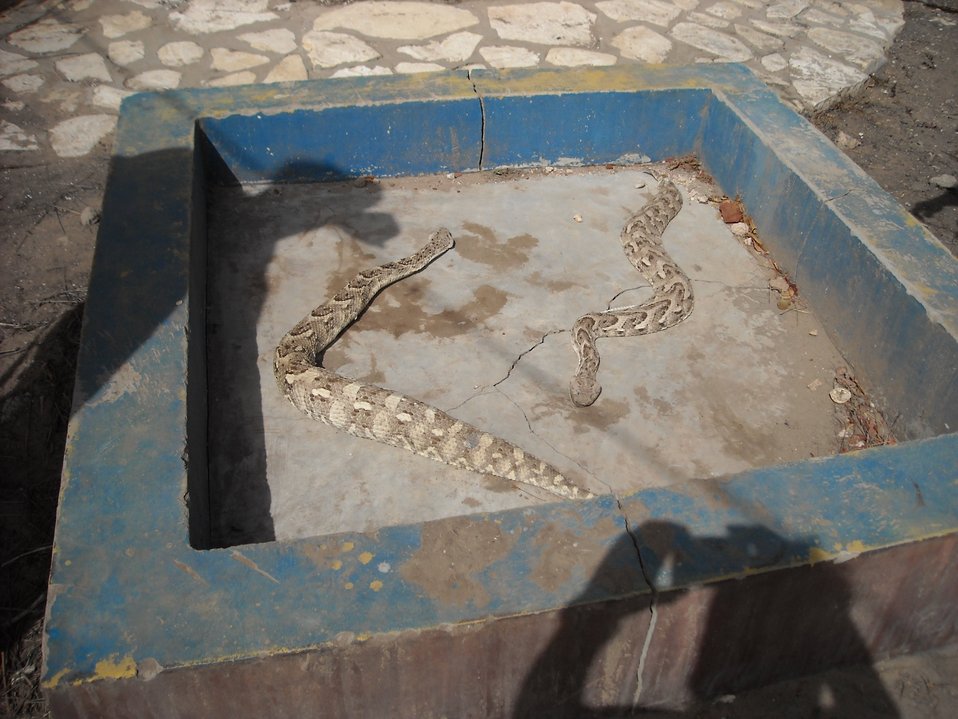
Puff adders, among the most deadly creatures on earth.